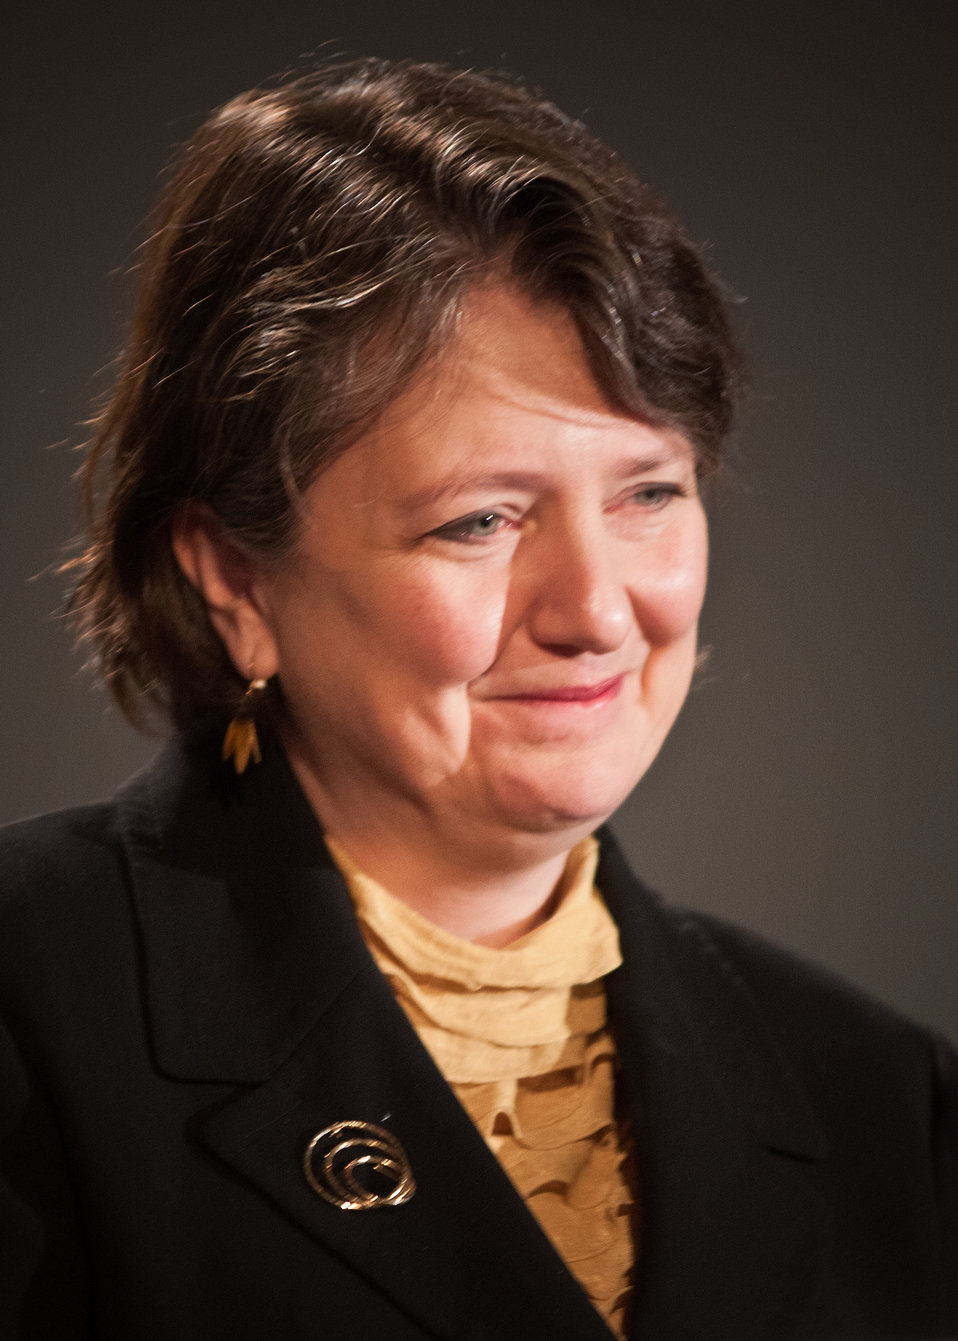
Dr. Kathleen Merrigan, Agriculture Deputy Secretary welcomes employees and visitors to the National Service Day and Martin Luther King Celebration in honor of Dr. Martin Luther King Jr.’s contributions to the Civil Rights Movement at the United States Department of Agriculture in Washington, D.C., on Thursday, January 12, 2012.